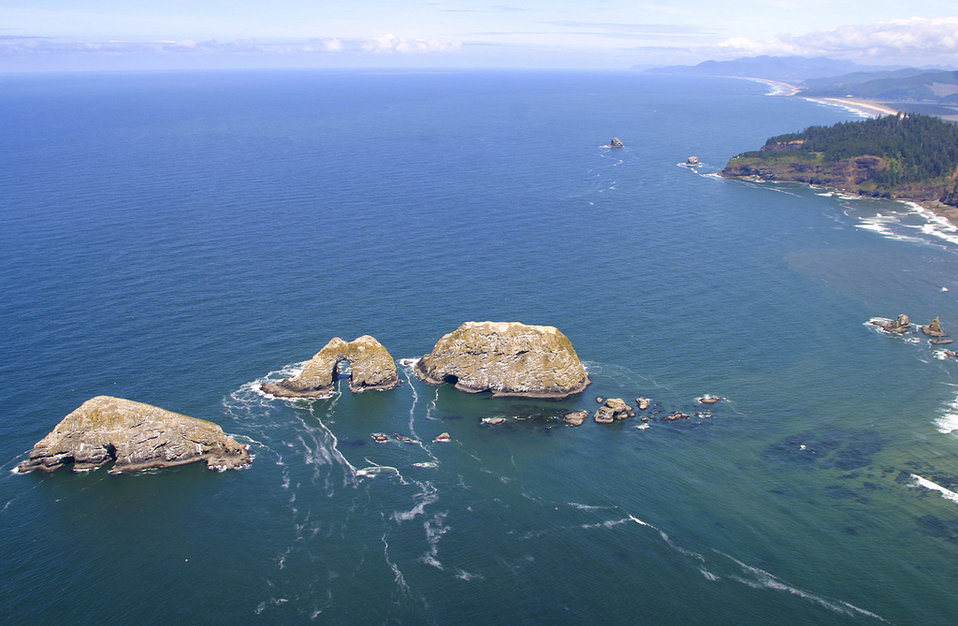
Three Arch Rocks National Wildlife Refuge, OR
Three Arch Rocks NWR is the center left of the photo with Cape Meares NWR and a portion of Oregon Islands NWR located in the upper right.